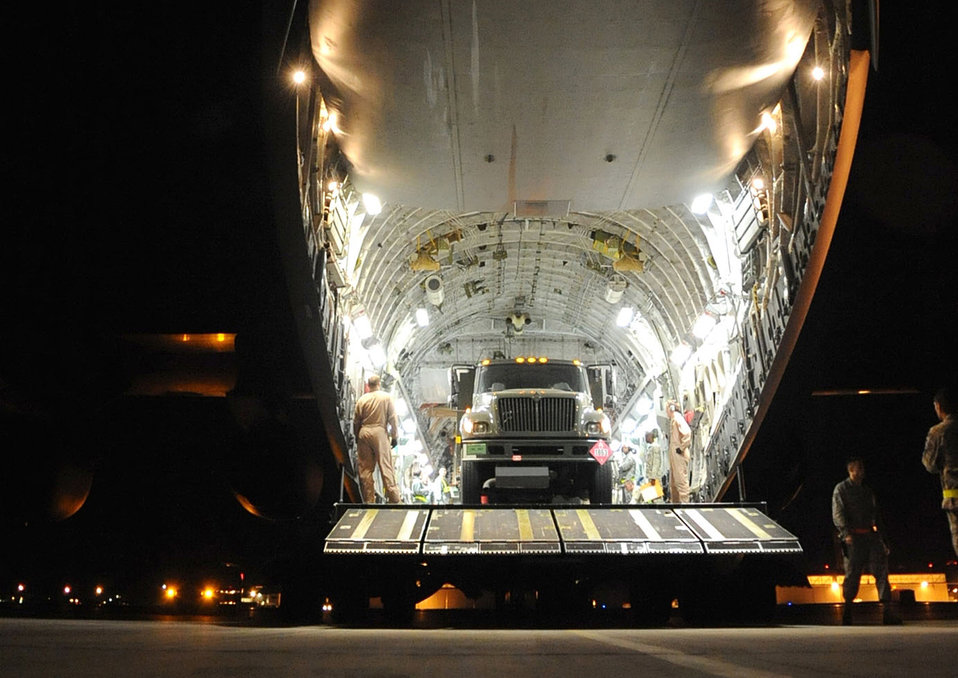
Refueling trucks

Loadmasters prepare to unload a refueling truck from a C-17 Globemaster III March 23, 2011, at Aviano Air Base, Italy, in support of Operation Odyssey Dawn.